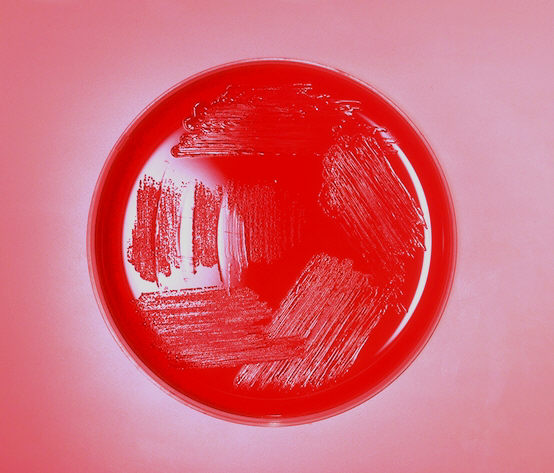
Blood agar plate culture of Haemophilus aphrophilus.